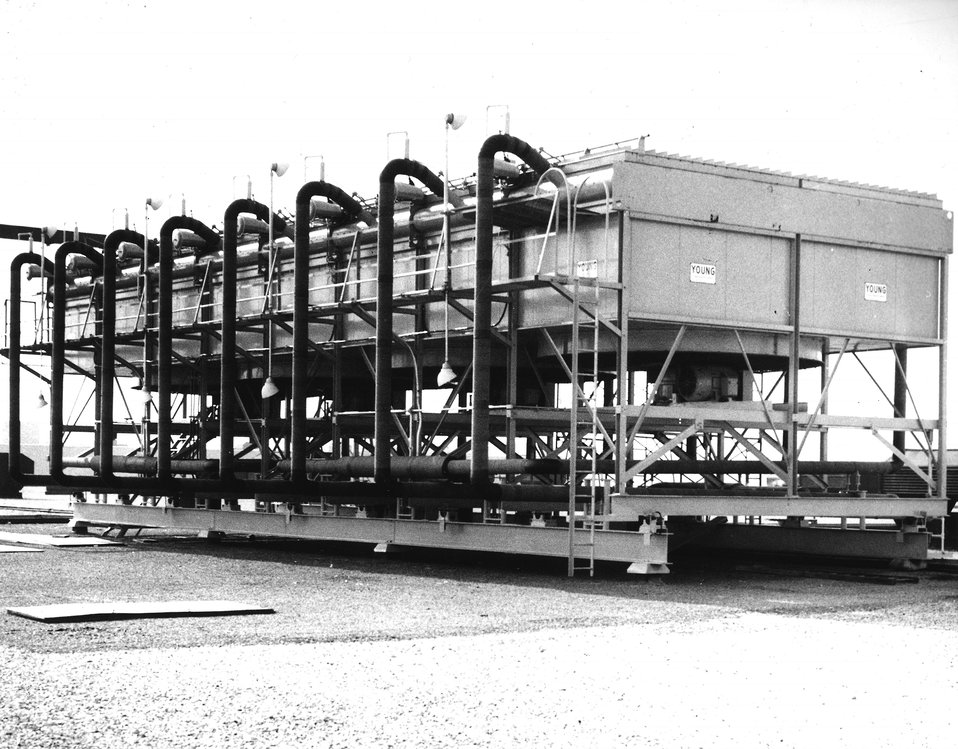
This photo is of a prototype air-cooled condenser now undergoing tests at the Portsmouth (Ohio) Gaseous Diffusion Plant. A potential cost-saver is pollution control, the air-cooled condenser, being developed by Goodyear Atomic Corporation, has an operating cost which is one-tenth of that for existing water-cooled condensers. c. 1972